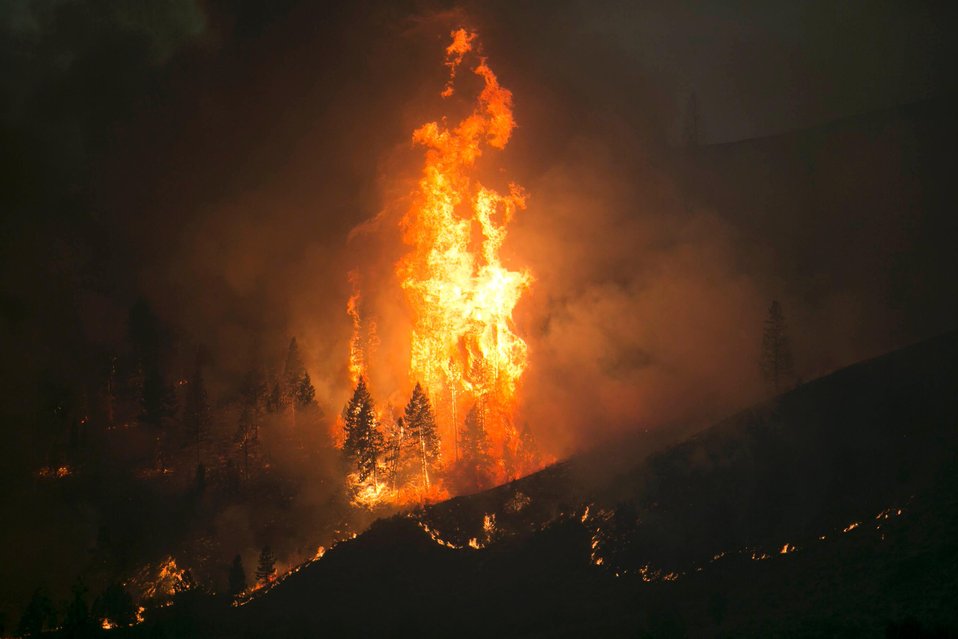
The Elk Complex Fire in the Boise National Forest near Pine, ID began on Aug. 08, 2013 by lightning has consumed approximately 98,413 acres and is approximately 5% contained.